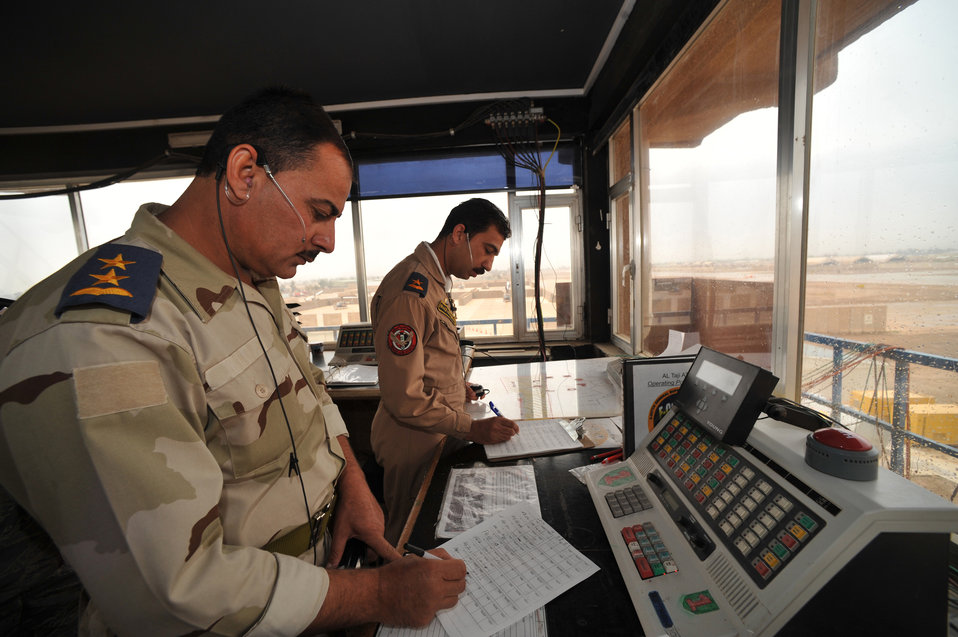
Iraqi airmen closer to controlling Taji tower

Iraqi air force air traffic controllers 1st Lt. Mortida (left) and 2nd Lt. Shorsh take notes recently on positions of other aircraft at Camp Taji, Iraq.